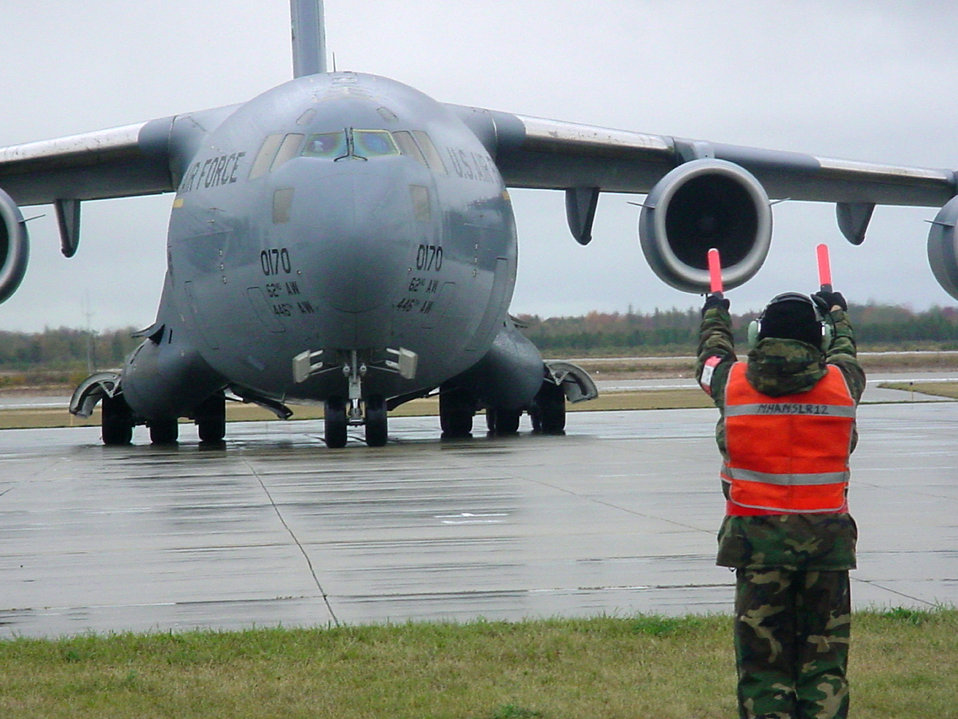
AMC exercise kicks off in Michigan

ALPENA, Mich. -- A crew chief from the 62nd Aircraft Maintenance Squadron at McChord Air Force Base, Wash., waves in a C-17 Globemaster III after the aircraft completed a training mission during exercise Crisis Outlook 2004 here Oct. 16.